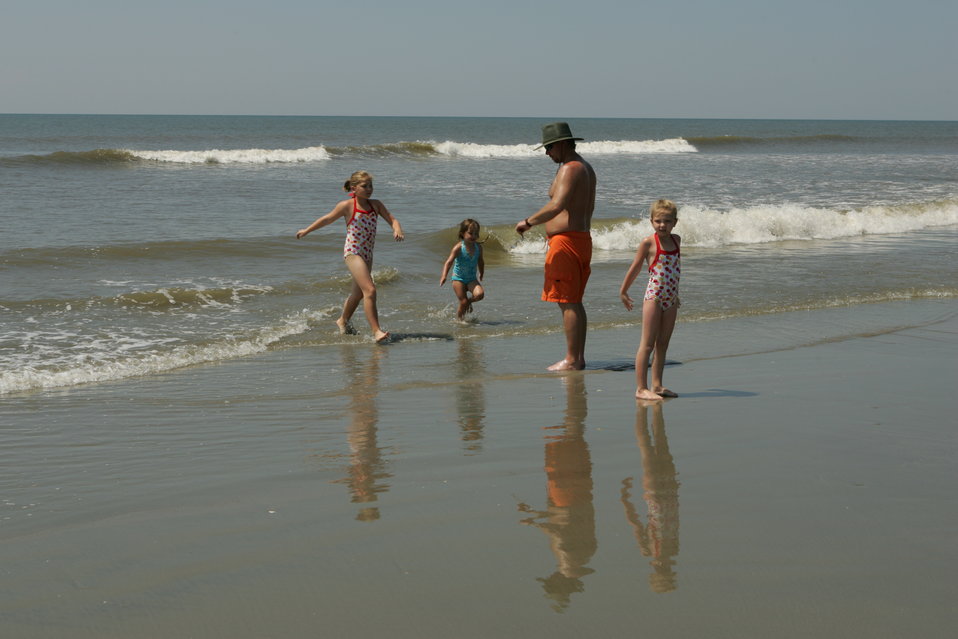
Beach Day

A Day at the beach on the refuge.